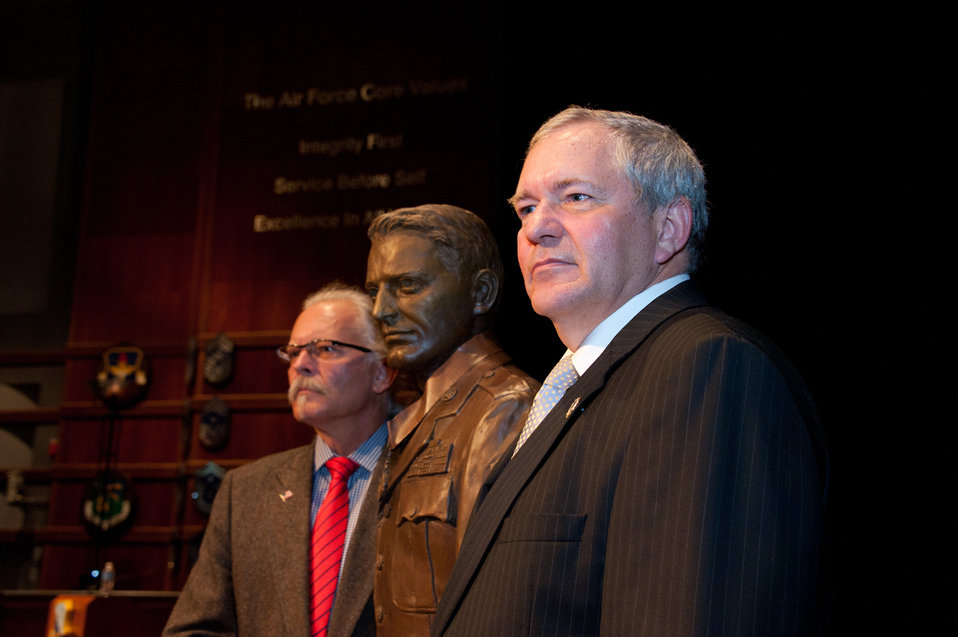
Etchberger legacy lives on

The sons of Chief Master Sgt. Richard L. Etchberger flank the statue of their father following its official unveiling at the Senior NCO Academy at Gunter Annex, Ala., March 26, 2012. Rich Etchberger, left, and Cory Etchberger, right, joined other family members and dignitaries, including Gen. Philip Breedlove, the vice chief of staff of the Air Force, and Chief Master Sergeant of the Air Force James Roy, in honoring their father's legacy with the dedication of his Medal of Honor and the bust unveiling at the Air Force SNCOA.